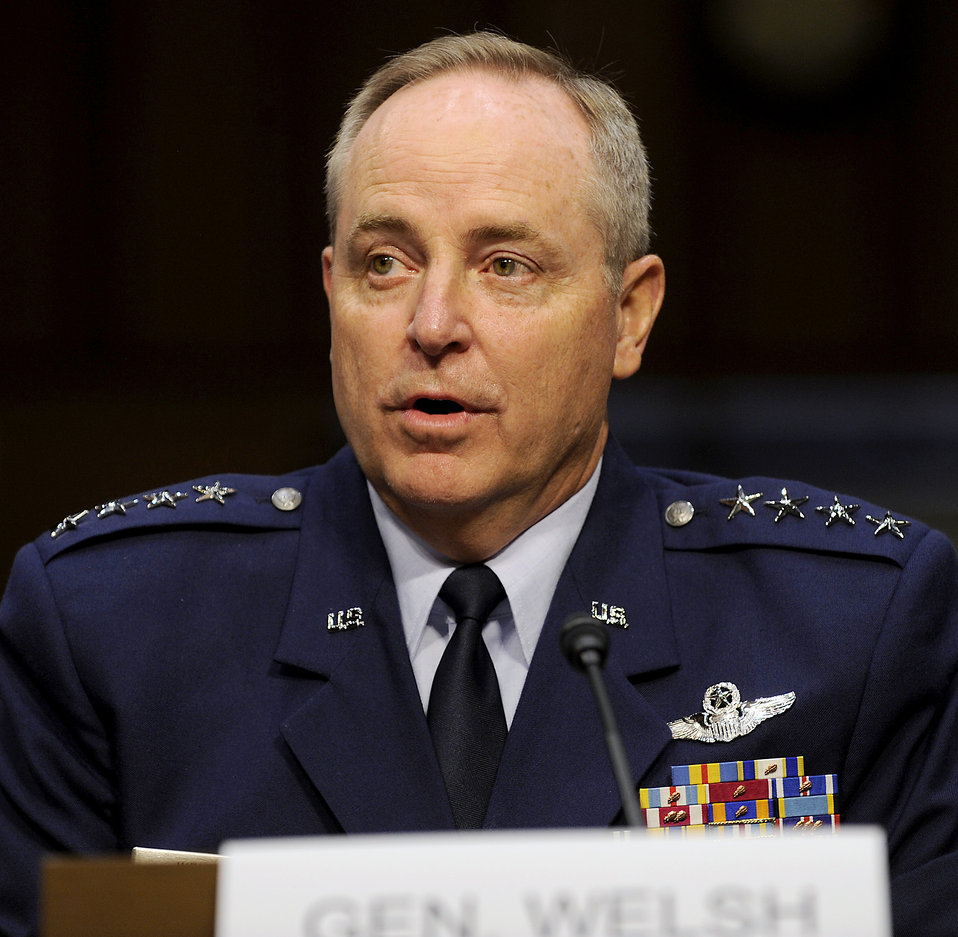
CSAF nominee

Gen. Mark A. Welsh III, the commander of U.S. Air Forces in Europe, testifies before the Senate Armed Services Committee in Washington, D.C., on July 19, 2012, as part of the confirmation process to serve as the 20th Air Force Chief of Staff. If confirmed, Welsh will replace Gen. Norton Schwartz, who retires Aug. 10.